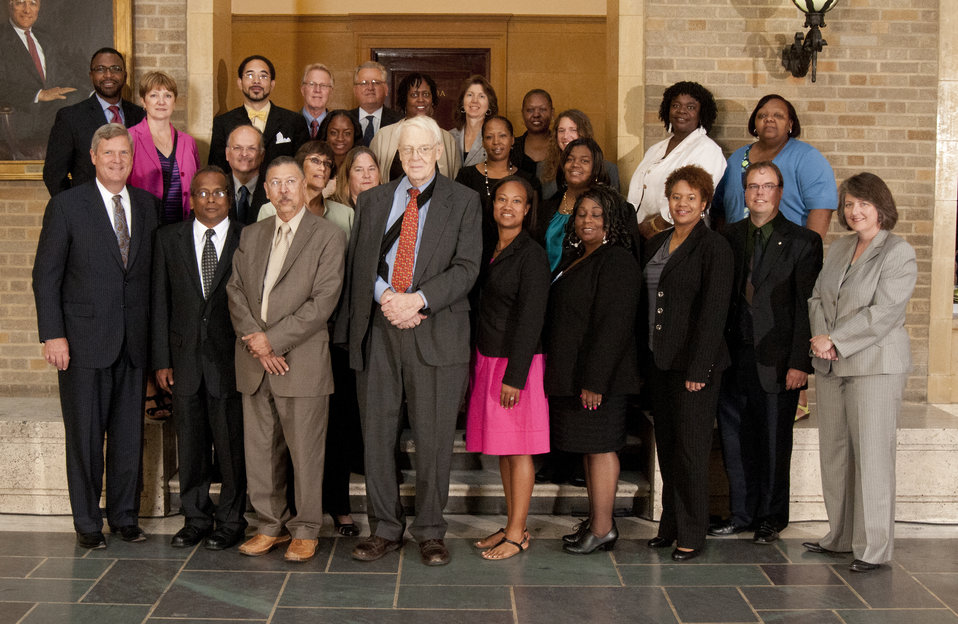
Agriculture Secretary Tom Vilsack and Deputy Agriculture Secretary Kathleen Merrigan with Honor Award Group Small Business Innovation Research, National Institute of Food and Agriculture (NIFA) on the patio of the U.S. Department of Agriculture in Washington, D.C. on Wednesday, Sept. 12, 2012. The Small Business Innovation Research advanced rural economies through supporting the commercialization of new scientific concepts by small businesses.